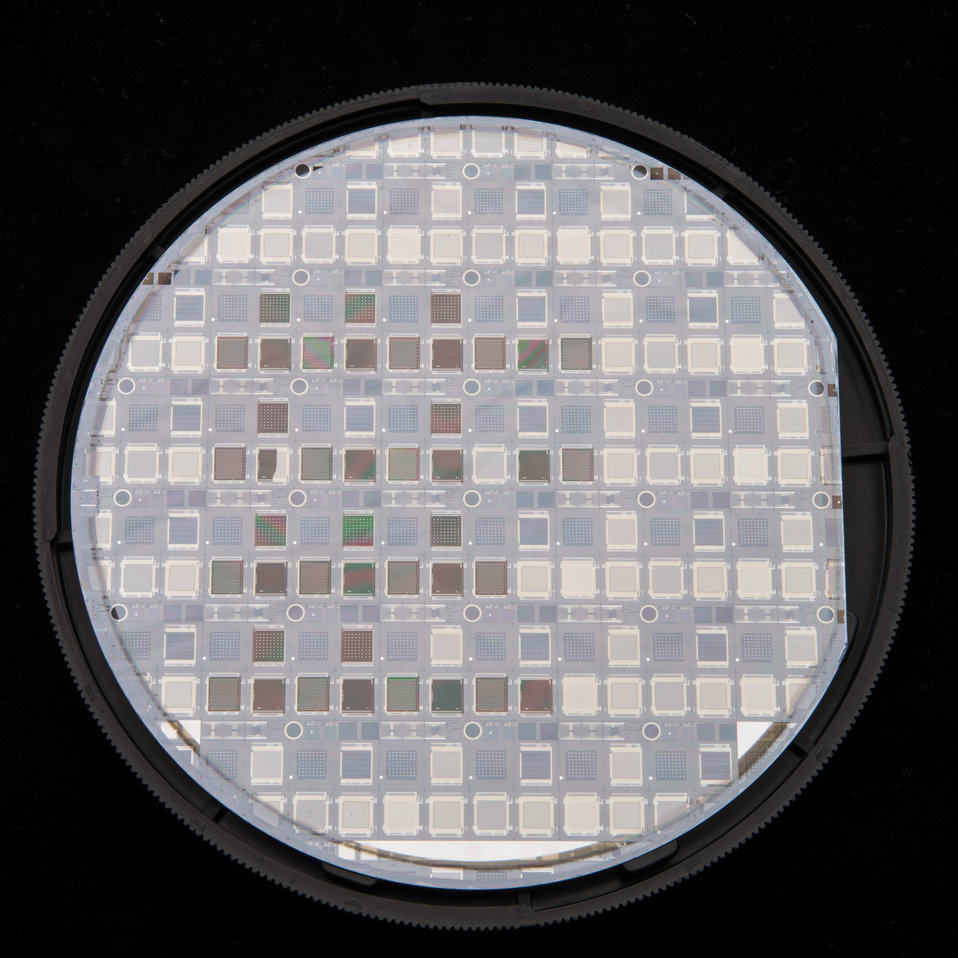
FERMI LAB 3-D CHIPS BONDED ON THE BNL SENSOR WAFERS USING THE CU OXIDE-OXIDE BONDING TECHNOLOGY.